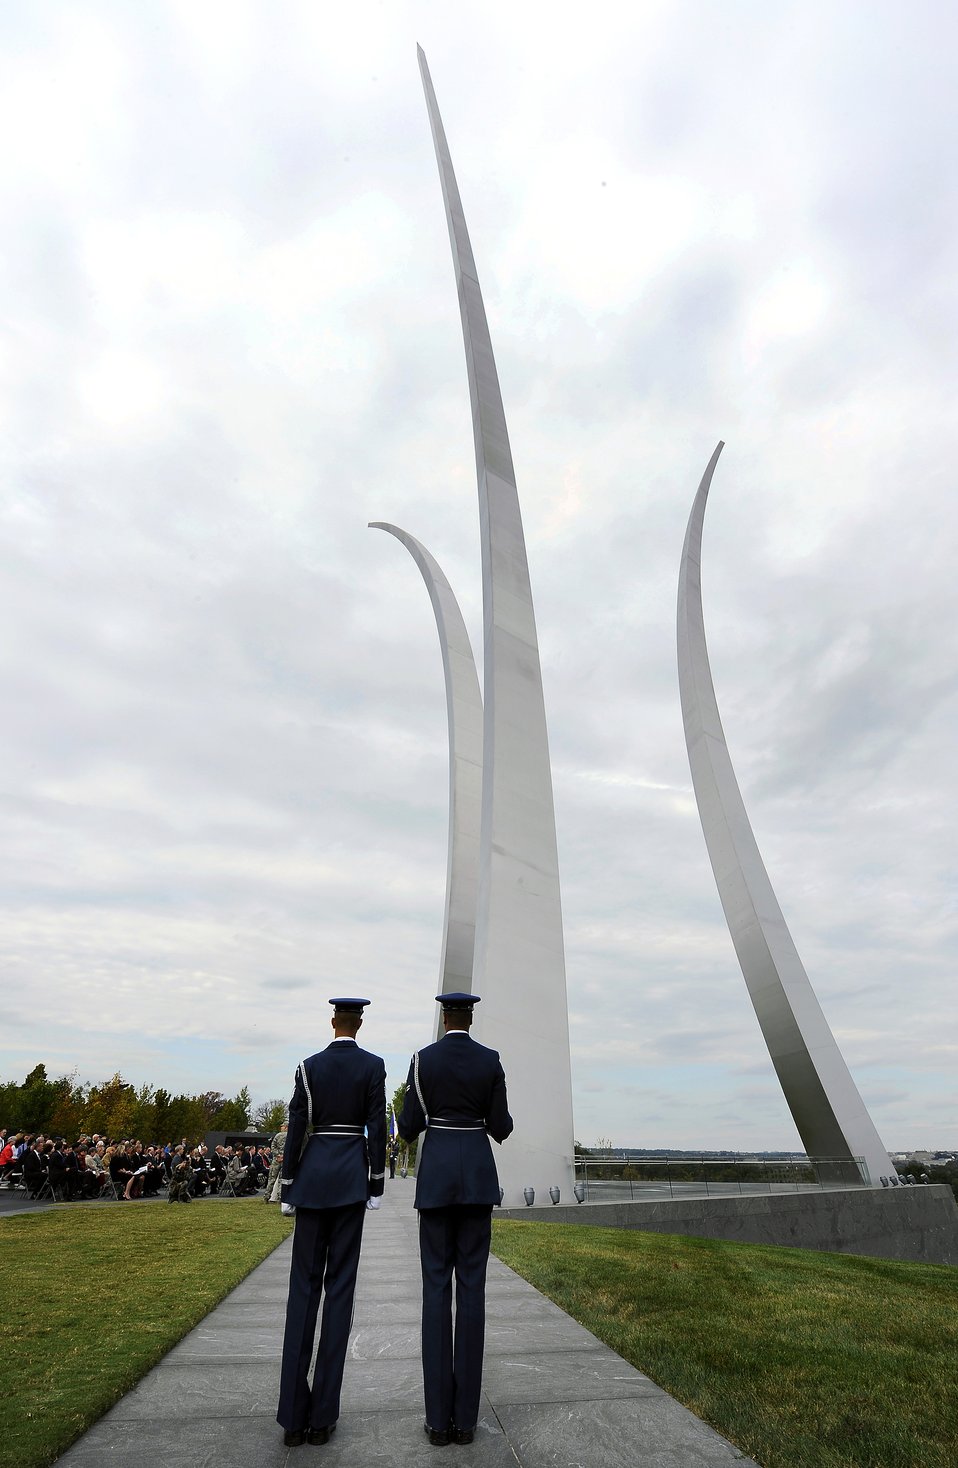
Secretary of Defense Robert M. Gates

Two U.S. Air Force Honor Guard personnel stand fast during the swearing in of Secretary of the Air Force Michael B. Donley at the Air Force Memorial in Arlington, Va., Oct. 17.